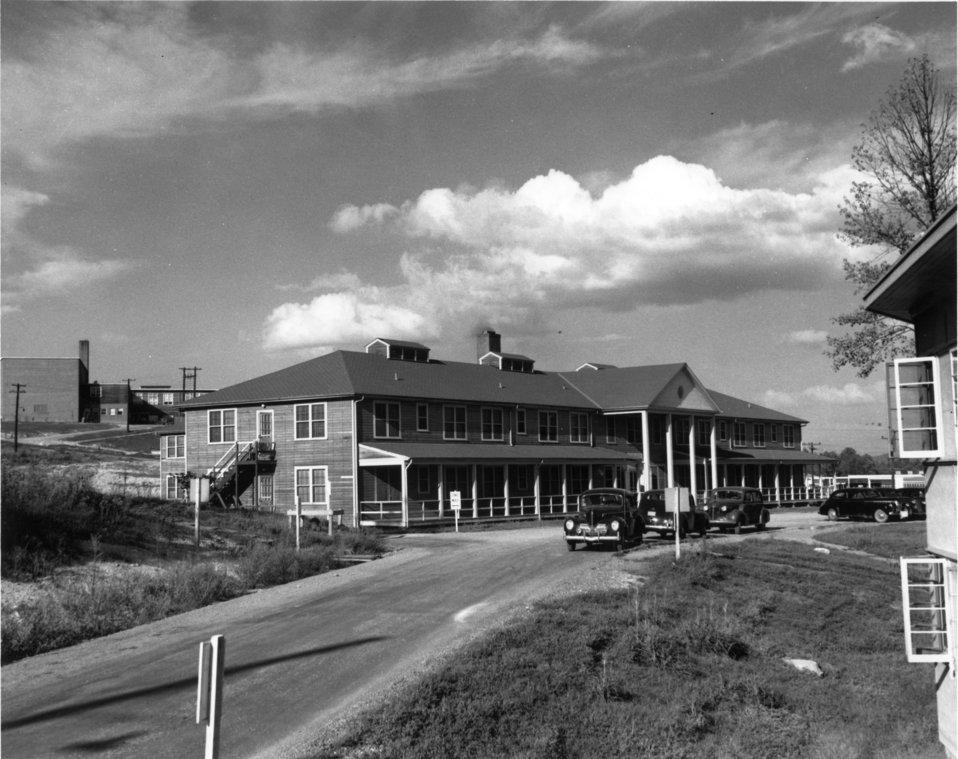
Guest House Oak Ridge

PRO DOE Photo by Ed Westcott 9-1945 Oak Ridge Tennessee